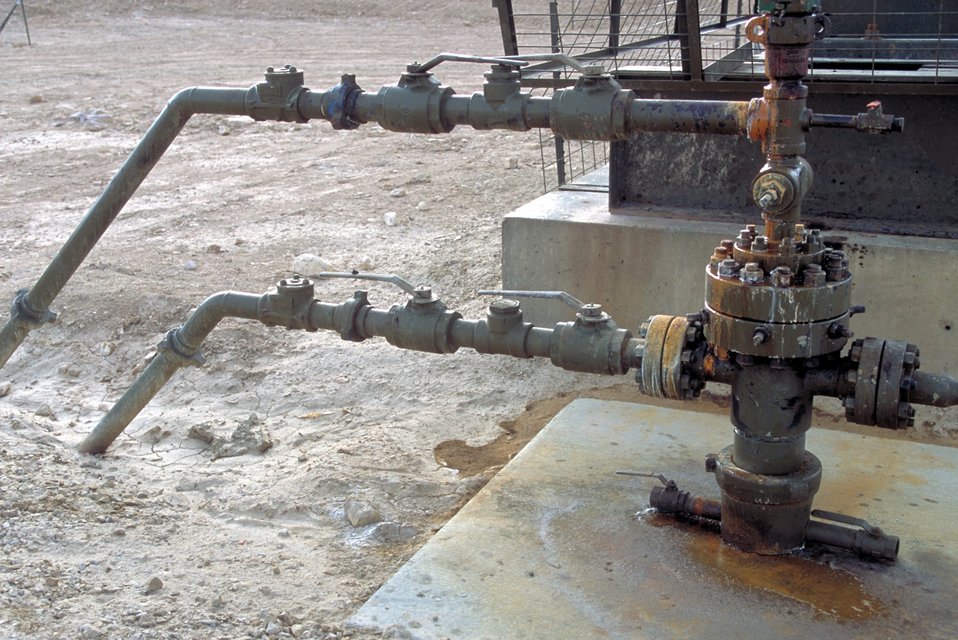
Pump unit producing coal bed methane near Price, Utah.